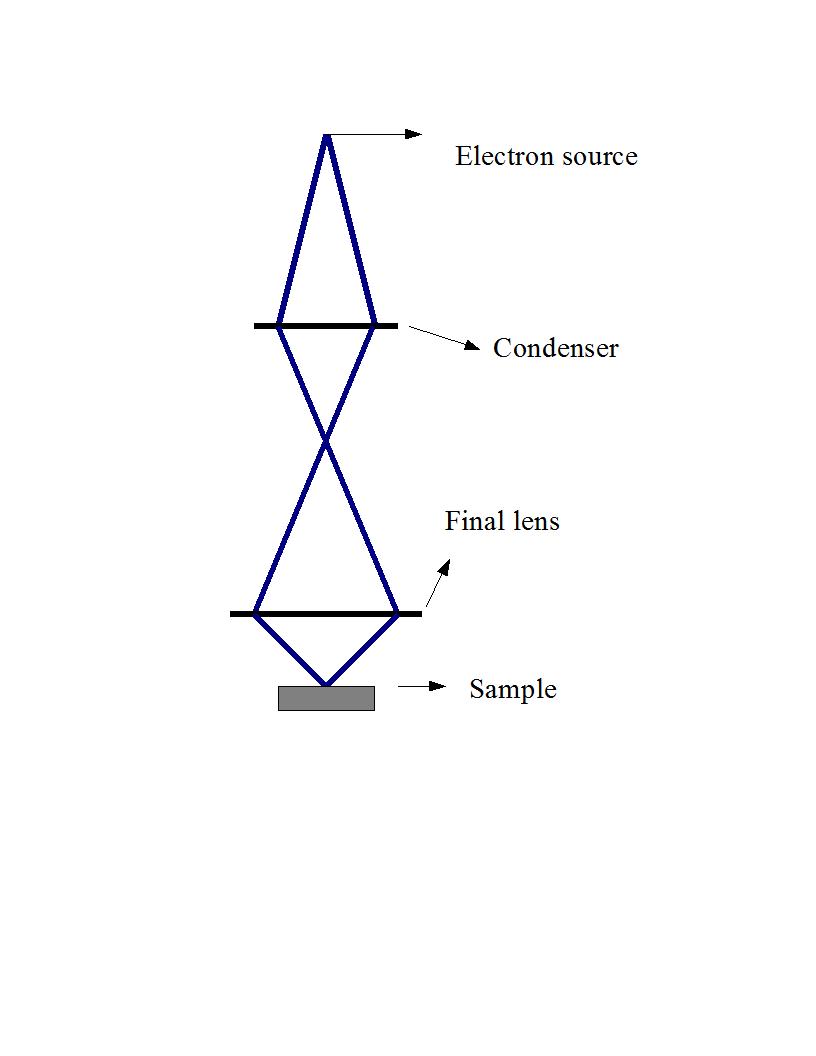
Two-lens demagnifying optical system.